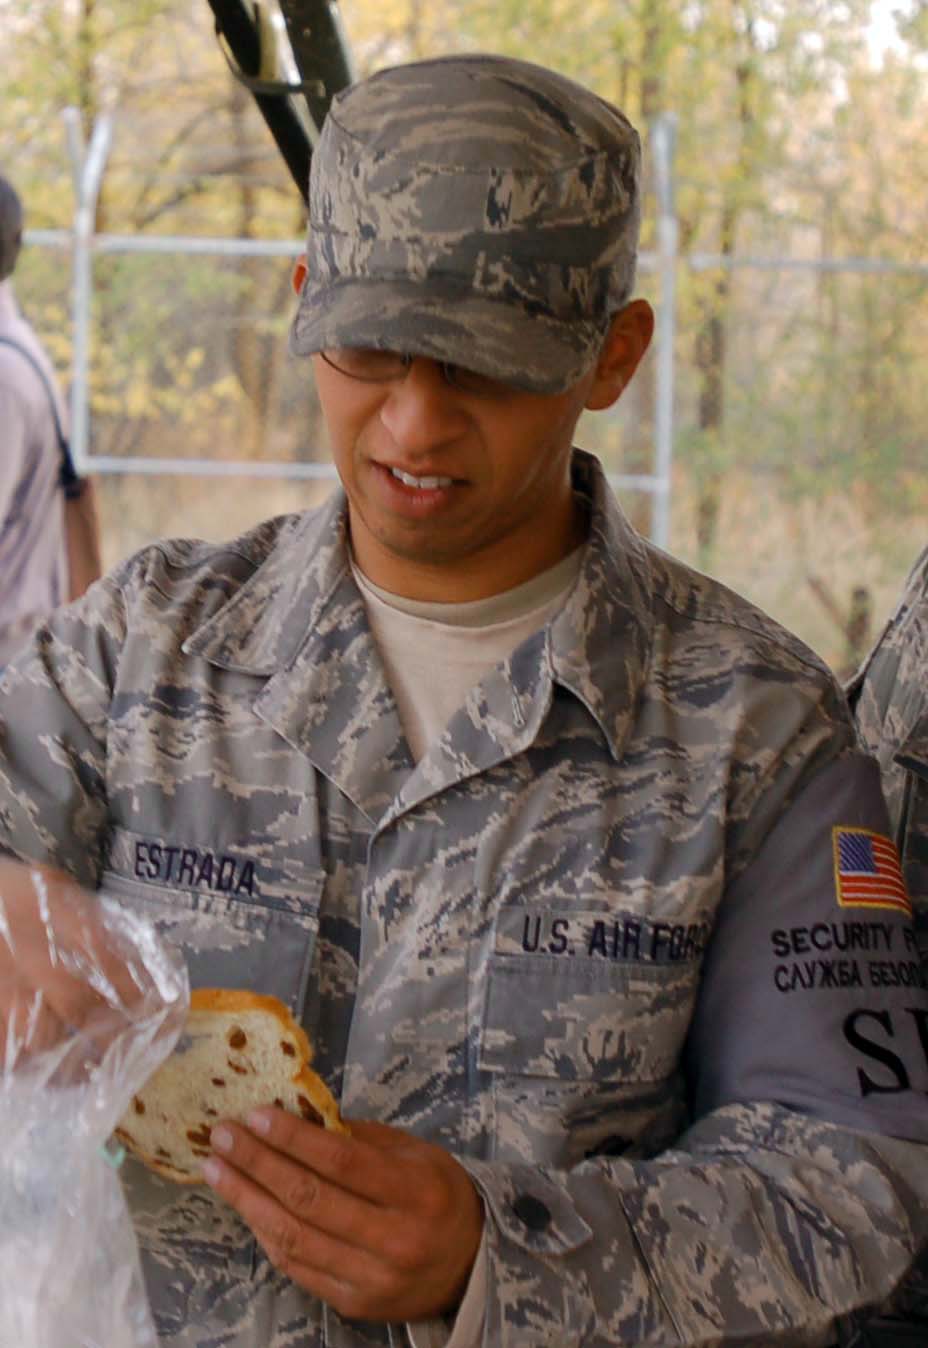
Airmen take steps to boost Kyrgyz economy

Staff Sgt. Jake Estrada tastes a sample of raisin bread during the first delivery of local Kyrgyz produce and breads Oct. 27, 2009, at the Transit Center at Manas, Kyrgyzstan. The delivery was part of the steps Airmen here are making to support more local businesses. Sergeant Estrada is assigned to the 376th Expeditionary Security Forces Squadron.